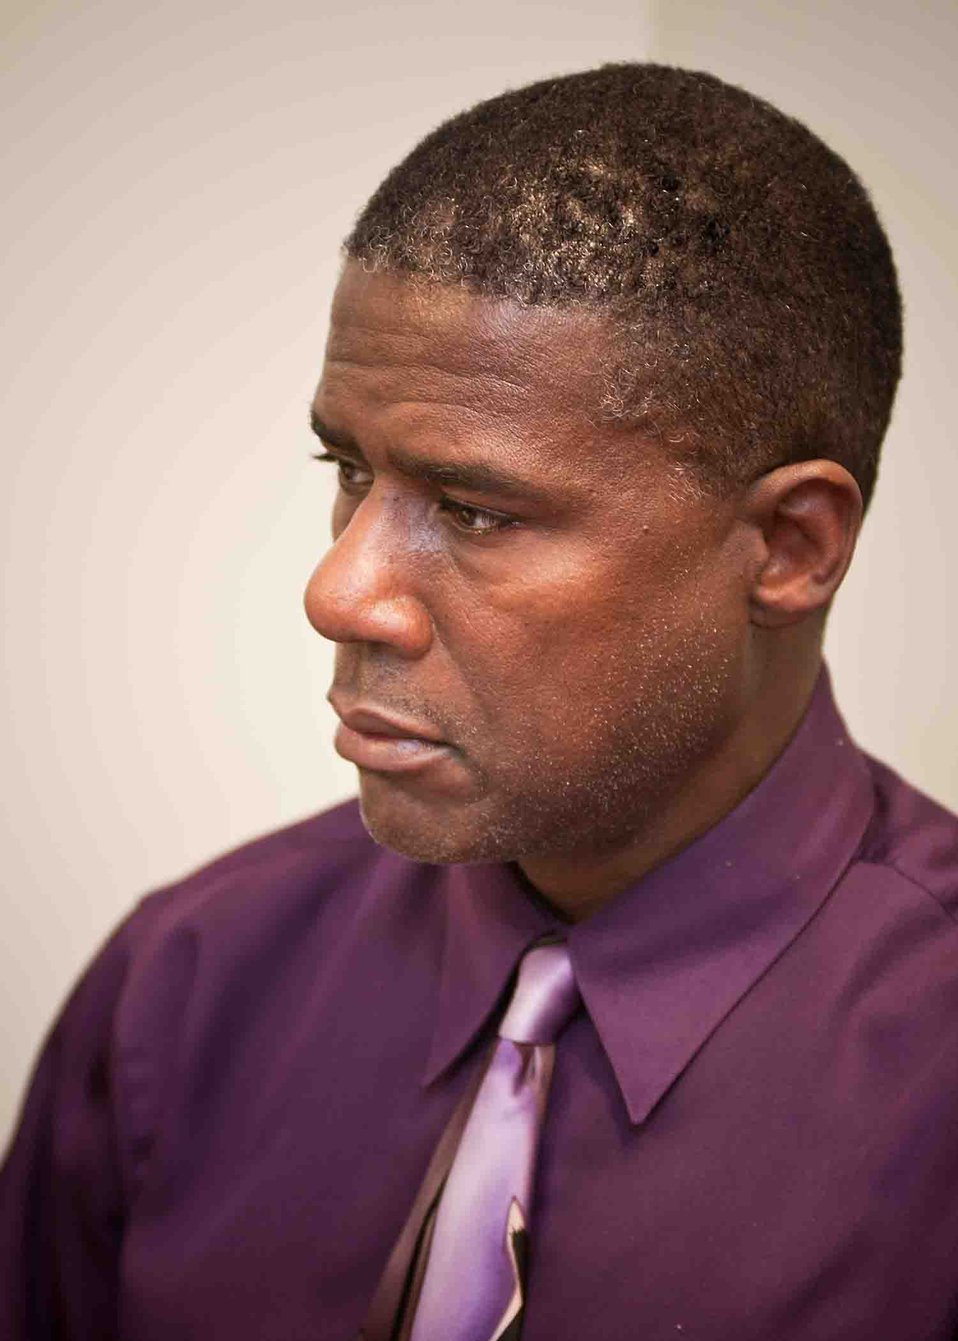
Equal Employment Opportunity Specialist, Food and Nutrition Service Randolph Cassidy listens during an Early Resolution and Conciliation Division open house and training workshop for employees and supervisors at the United States Department of Agriculture (USDA) in Washington, DC, Wednesday, Jun. 15, 2011. The primary goal of the workshop was to strengthen the Alternative Dispute Resolution (ADR) community through outreach, training and partnership with agencies in USDA and make employees aware of ADR.